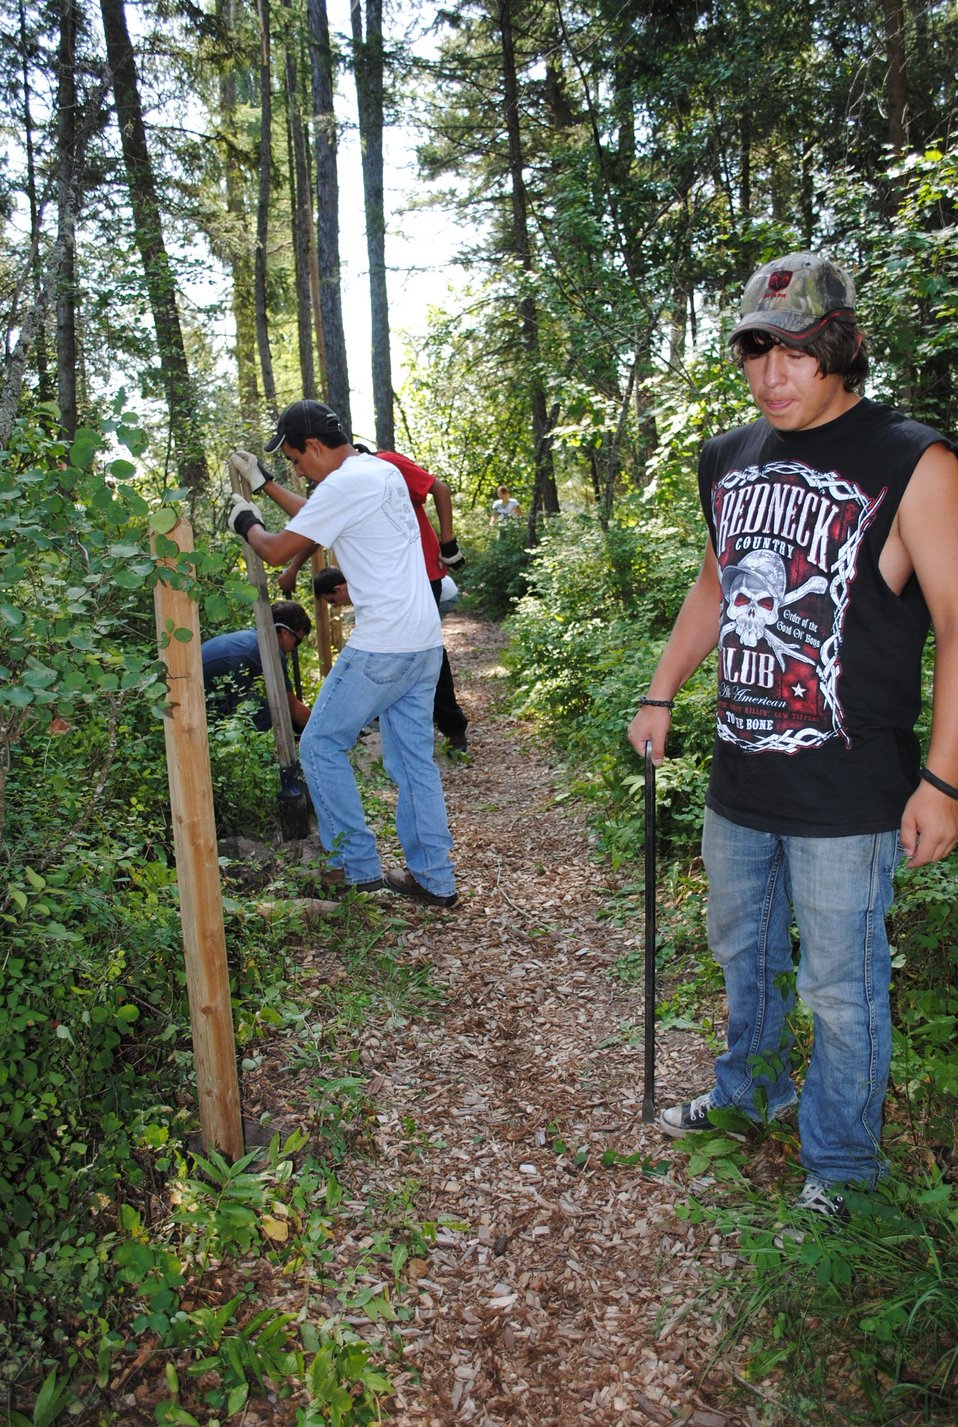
2012 Montana Youth Conservation Corps Program in its Third Year at the Creston National Fish Hatchery

This project was designed to stablize the trail with water bars, add wood chips to trail, and to put in new post with a rope handle on the Nature Trail at the CNFH. The Montana YCC program is in its third year employing over fifty youth with summer jobs since 2010.